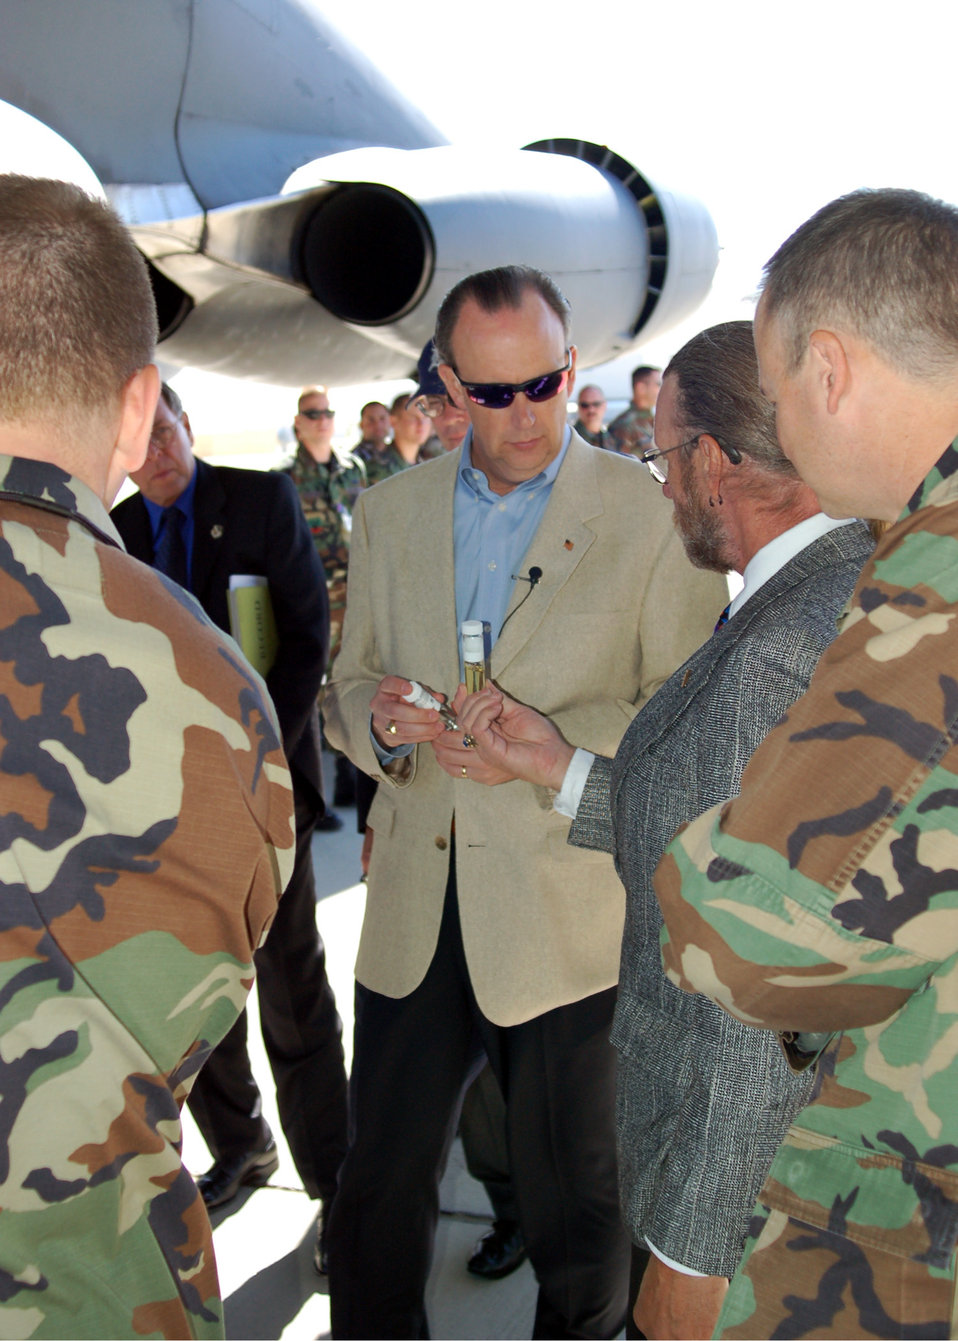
Air Force leader visits to observe base's energy conservation methods

William C. Anderson reviews samples of the Fischer-Tropsch fuel under the wing of the B-52 used during a recently alternative fuels test at Edwards Air Force Base, Calif., Oct. 25. The alternative fuel used was a 50-50 blend of traditional crude-oil based jet fuel and the Fischer-Tropsch fuel derived from natural gas. Mr. Anderson is the assistant secretary of the Air Force for installations, environment and logistics.